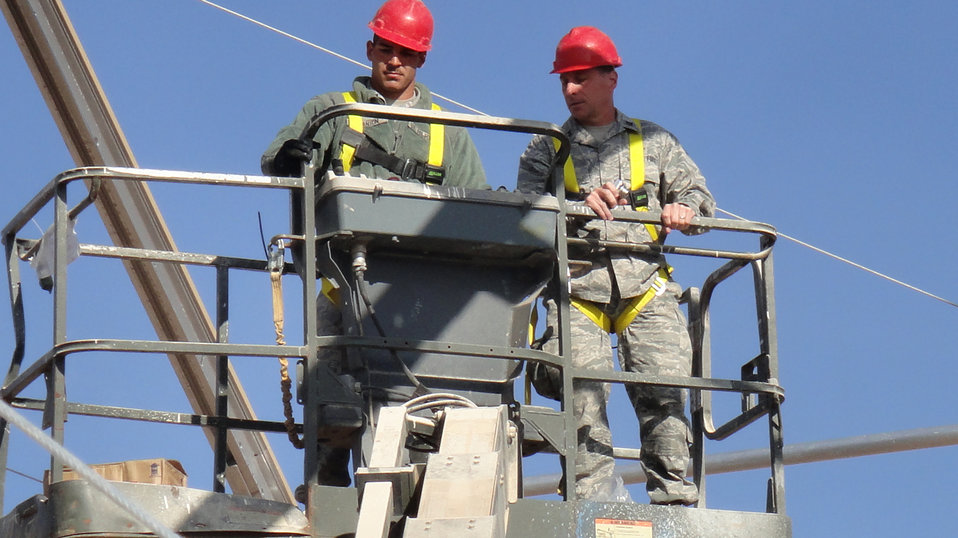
Circuit-riding chaplains rack up frequent flyer miles

Chaplain (Capt.) Mark Nevius assists during crane operation in Afghanistan. Chaplain Nevius is the 1st Expeditionary RED HORSE Group chaplain. Chaplain Nevius and Staff Sgt. Todd Hankey deploy to the various RED HORSE locations to meet the spiritual needs of service members downrange. Sergeant Hankey is a chaplain's assistant.